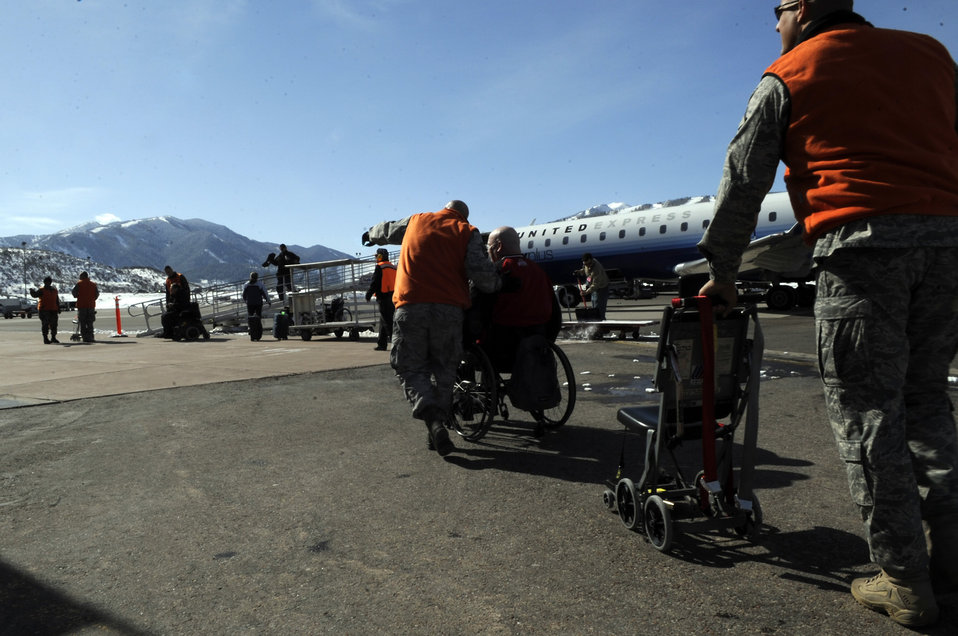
Luke Airmen assist disabled veterans at ski clinic

Airmen from Luke Air Force Base, Ariz. escort a veteran off a United aircraft March 28 at the Aspen Airport, Colo. Veterans from all over the world fly into Aspen to attend the Disabled American Veterans Winter Sports Clinic.